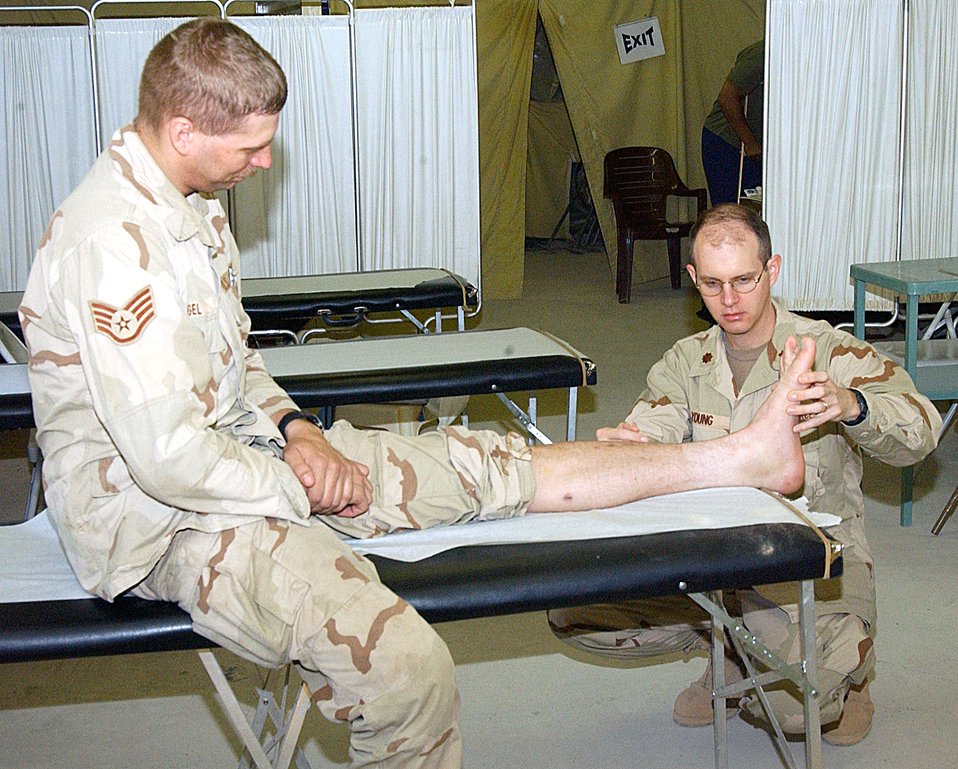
Physical medicine team keeps 'sprains and strains' down

BALAD AIR BASE, Iraq -- Maj. Brian Young looks at Staff Sgt. Eric Vogel's ankle. Major Young is a physical therapist with the 332nd Expeditionary Medical Group here, and Sergeant Vogel is assigned to the 732nd Expeditionary Logistics Readiness Squadron.